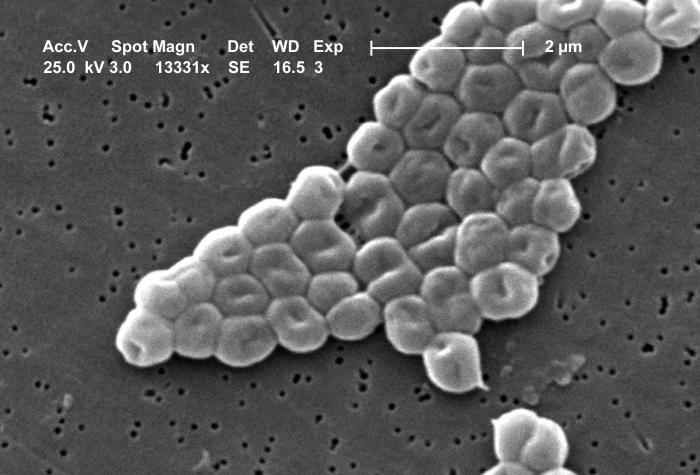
This SEM depicts a highly magnified cluster of Gram-negative, non-motile Acinetobacter baumannii bacteria; Mag - 13331x.